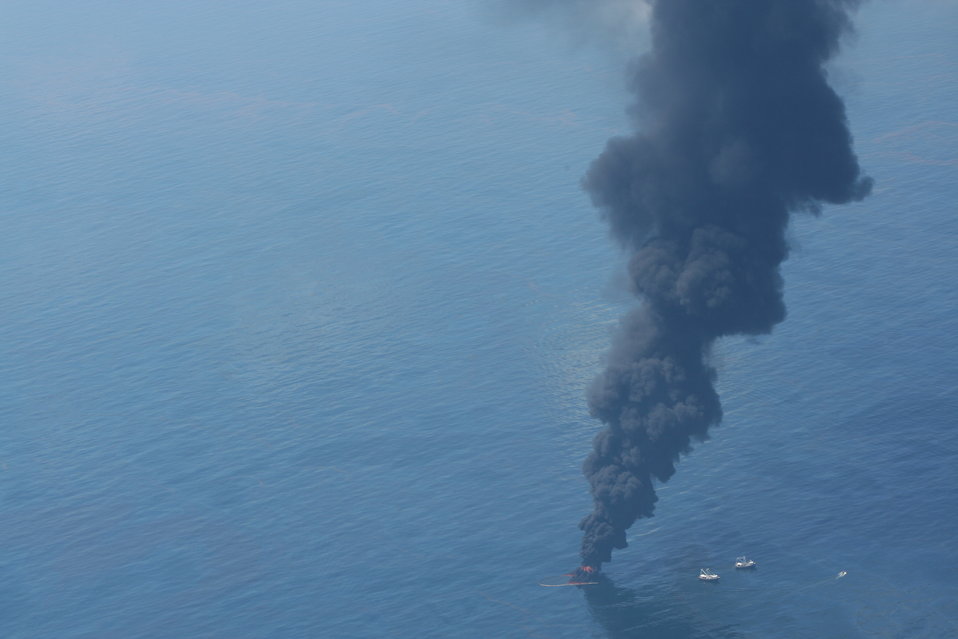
May 6 Open Water Oil Burn

May 6, 2010 - Open-water oil burn

Photo taken from U.S. EPA's Airborne Spectralphotometric Environmental Collection Technology (ASPECT) aircraft.